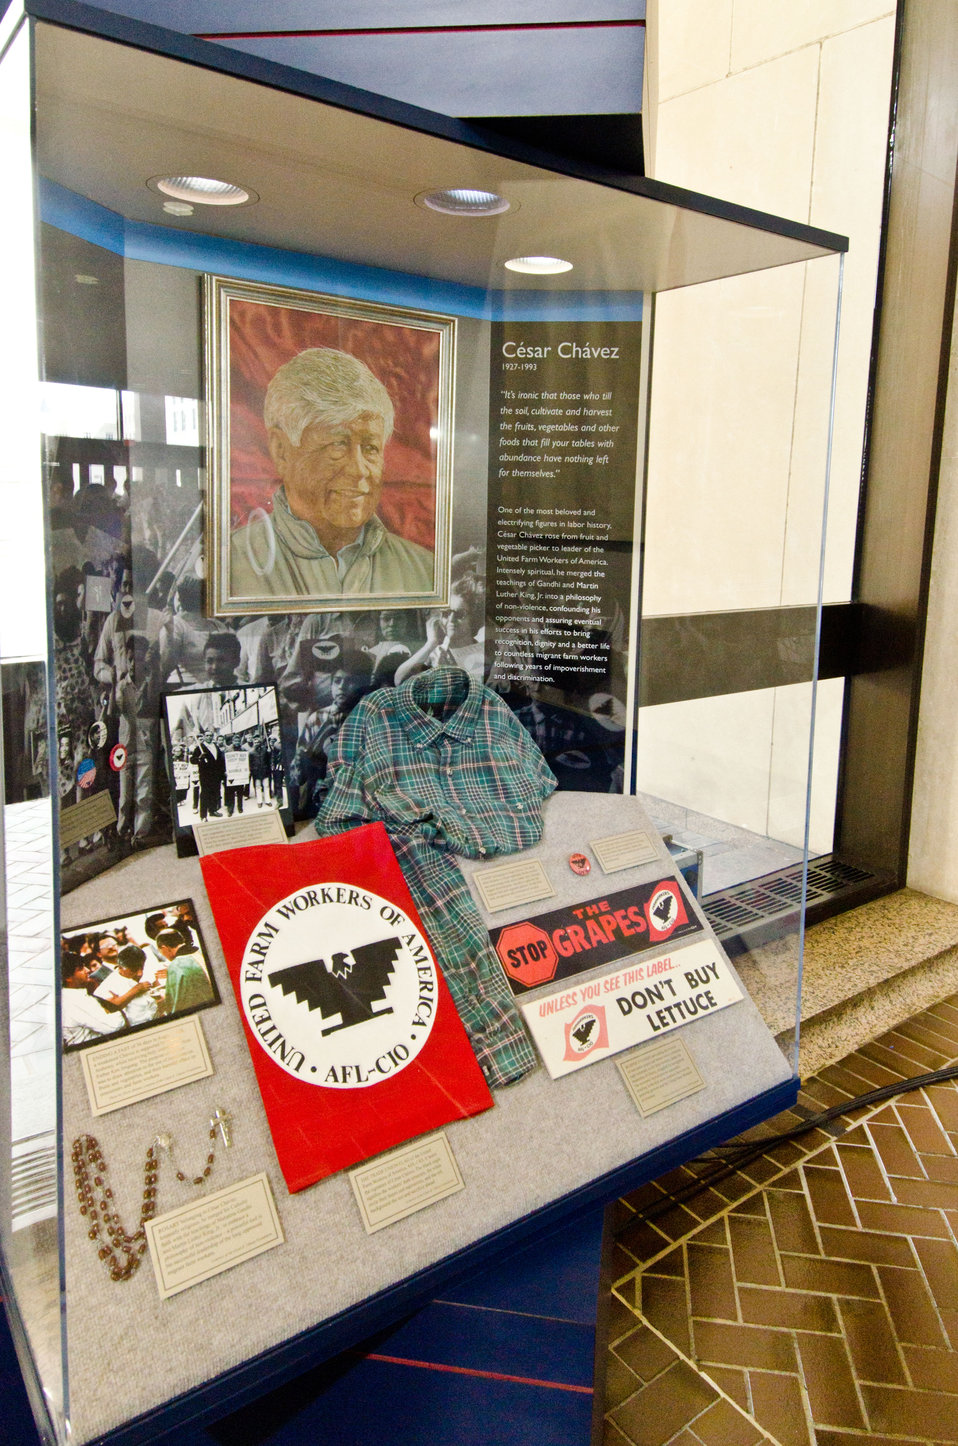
An exhibit of memorabilia to Cesar Chavez outside the auditorium dedicated to the to farm labor leader at the United States Department of Labor in Washington, D.C., Monday, March 26, 2012. Chavez was a Mexican-American labor leader who used non-violent methods to fight for the rights of migrant farm workers in the southwestern United States. Chavez founded the Cesar Chavez Foundation, a group that advocates for the rights of farm workers, acting to increase wages and improve the working conditions and safety of farm workers.